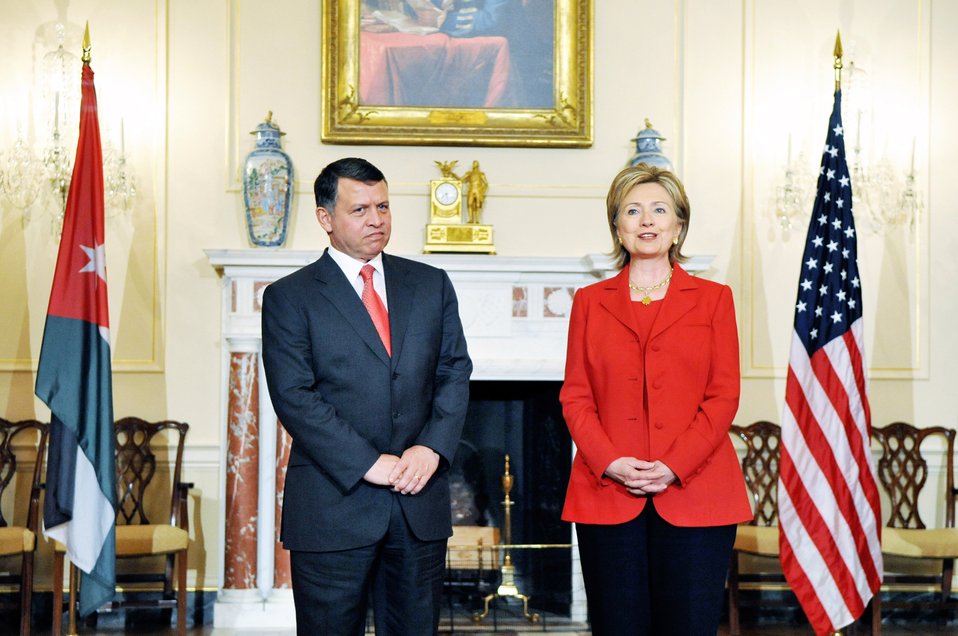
Secretary Clinton Meets With King of Jordan

U.S. Secretary of State Hillary Rodham Clinton meets with King Abdullah II of Jordan at the U.S. Department of State in Washington, DC April 21, 2009.